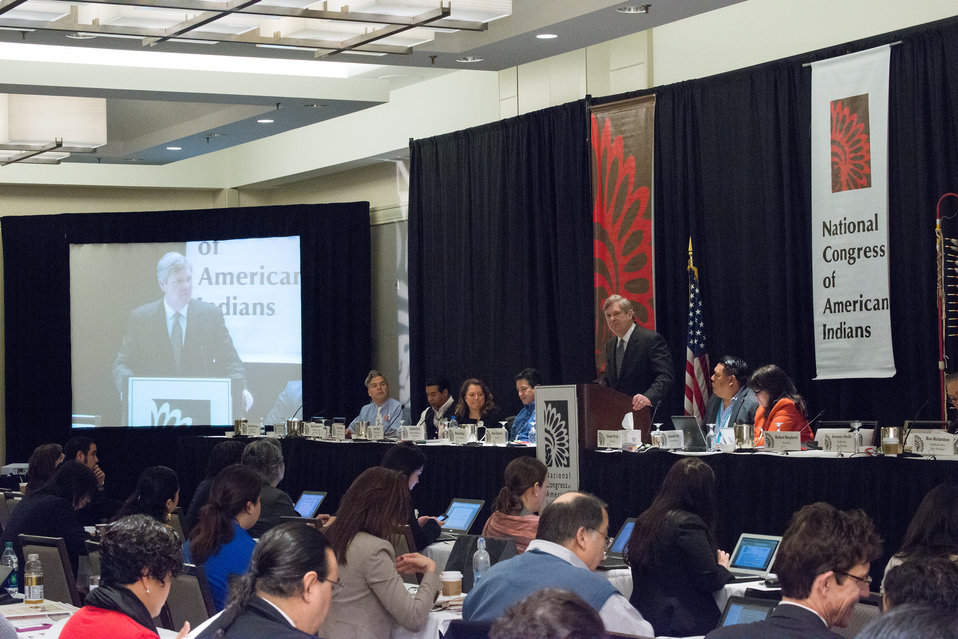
Agriculture Secretary Tom Vilsack addresses the 2014 National Congress of American Indians (NCAI) Executive Council Winter Session at the Westin Washington City Center in Washington, D.C. on Thursday, Mar. 13, 2014.